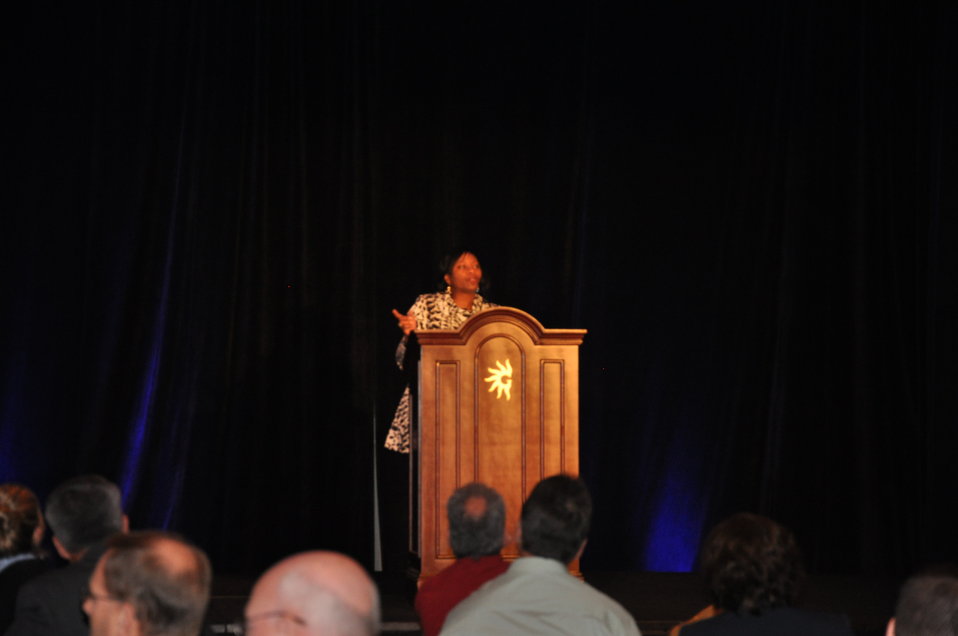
Information Exchange - Cynthia Anderson

EM Recovery Act Program Director Cynthia Anderson encourages participants in the Information Exchange to maintain momentum to ensure a successful close to Recovery Act projects in September 2011.